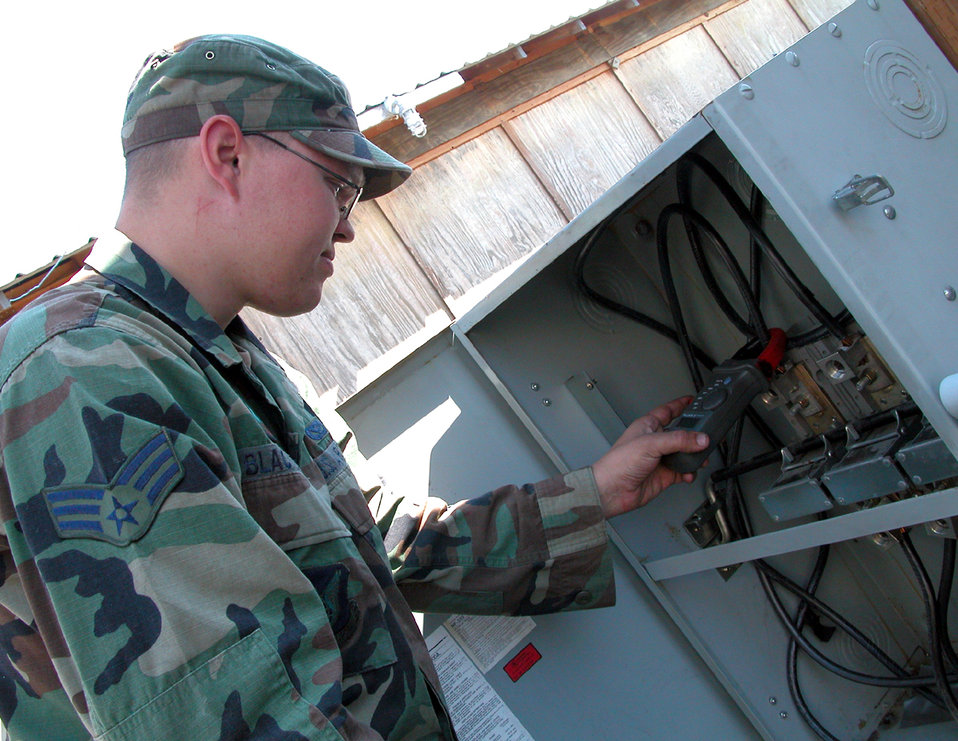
Airmen provide support during Operation Alaskan Road

CAMP WY-WUH, Alaska -- Senior Airman Christopher Blackburn tests amperage of an electrical power isolation switch that serves the camp. He is deployed here supporting Operation Alaskan Road from the 36th Civil Engineer Squadron at Andersen Air Force Base, Guam.